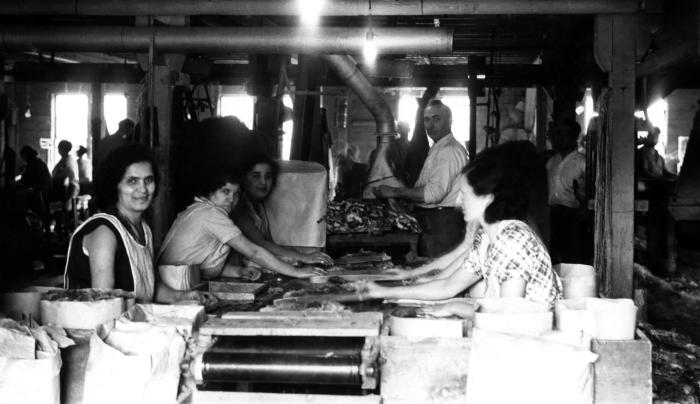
This historical image was provided by the Center for Disease Control's (CDC), National Institute for Occupational Safety and Health (NIOSH). Published in 1937, this photograph depicted a number of women seated at a fur-sorting table in the act of sorting newly processed fur inside a Connecticut animal fur processing establishment. None of the workers was wearing a filtered breathing masks, or any other protective accessories, including gloves.